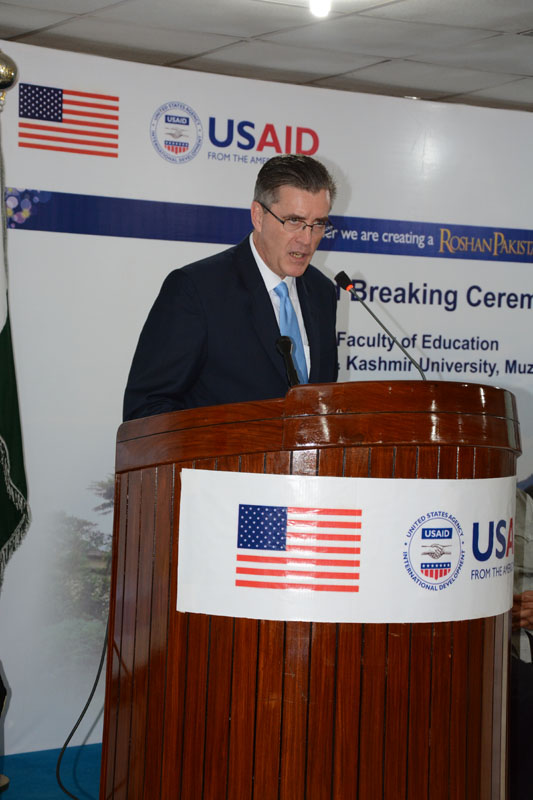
The United States Ambassador to Pakistan, Richard Olson broke ground for a U.S. funded construction of a new Faculty of Education building in Muzaffarabad, AJK. 24